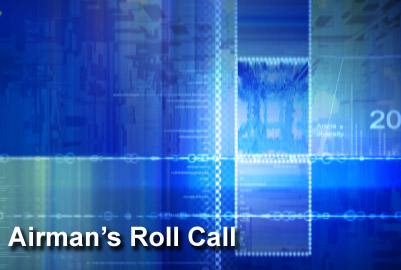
Airman's Roll Call: 12 Outstanding Airmen of the Year

The Air Force recently selected its 12 Outstanding Airmen of the Year.